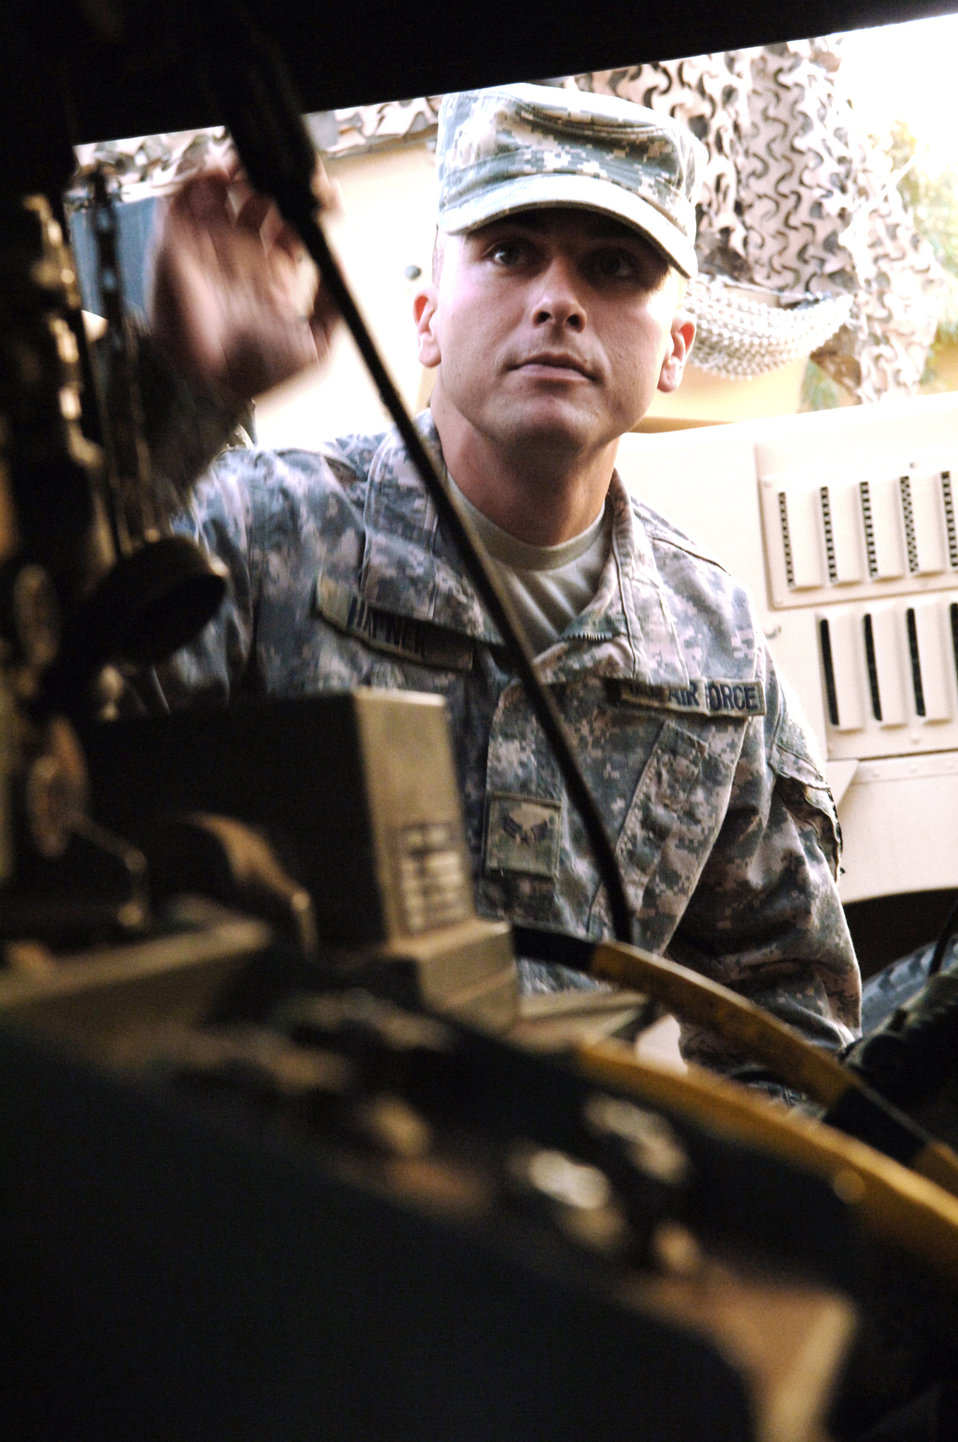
'Defender's Edge': A new approach to combat stress

Senior Airman Brian Hafner inspects his equipment and vehicle on the 532nd Expeditionary Security Forces Squadron's quick reaction force compound Aug. 20 at Joint Base Balad, Iraq prior to a patrol for combative activity off base. Airman Hafner has completed the Defender's Edge program during his time here at Joint Base Balad and uses techniques he learned there to deal with post-traumatic stress disorder symptoms. Airman Hafner is a member of the 532nd ESFS's quick reaction force.